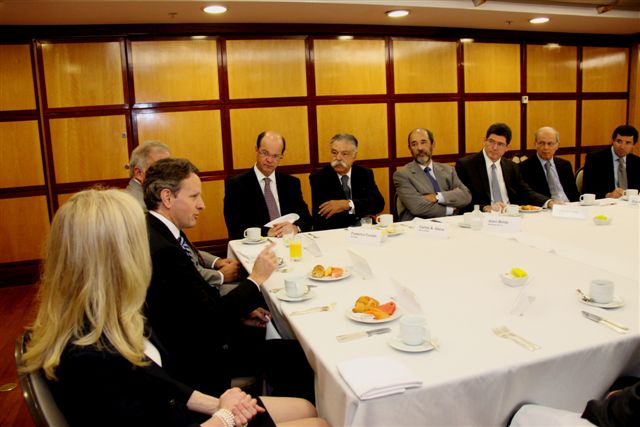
Secretary Geithner Travels to Brazil, 02/07/2011

On Monday, February 7, 2011, Secretary Geithner met with local business leaders and economists in Sao Paulo to discuss Brazil's economic and financial outlook as well as the state of the U.S. economy.